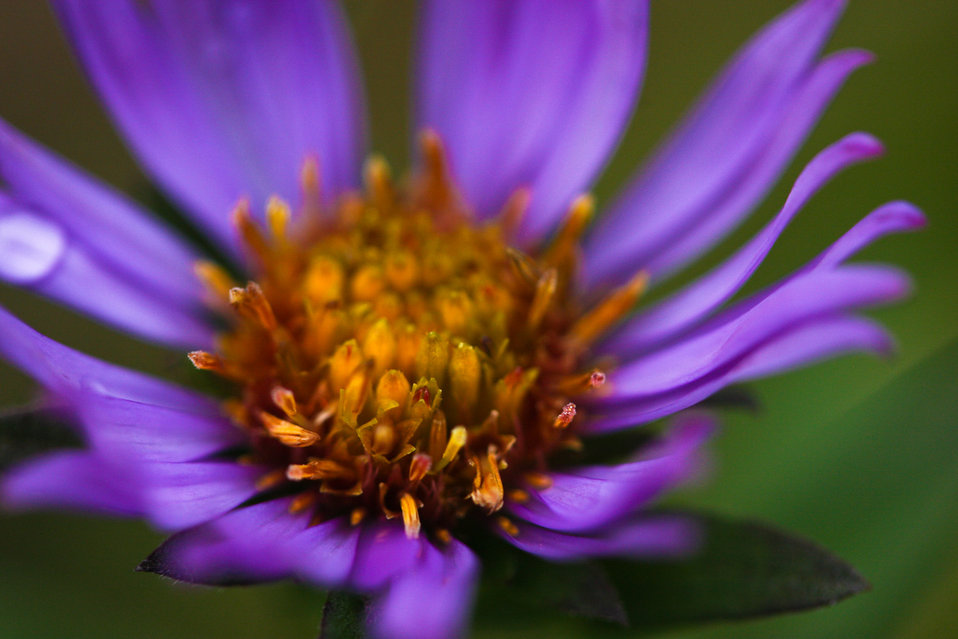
Aster

Lisa Hupp/USFWS